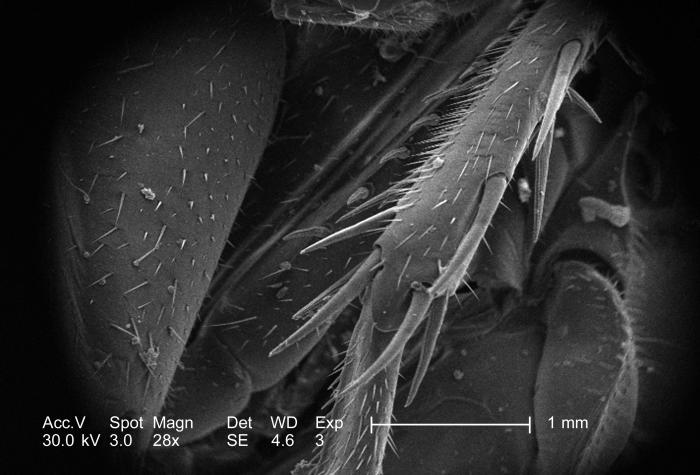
This scanning electron micrograph (SEM), viewed at a magnification of 28x, depicted the anatomical morphology found in the exoskeletal configuration of an unidentified roach found in a Decatur, Georgia home. The jointed modularity visible here in this insect's leg anatomy, helps to classify this roach as a member of the Phylum Arthropoda.